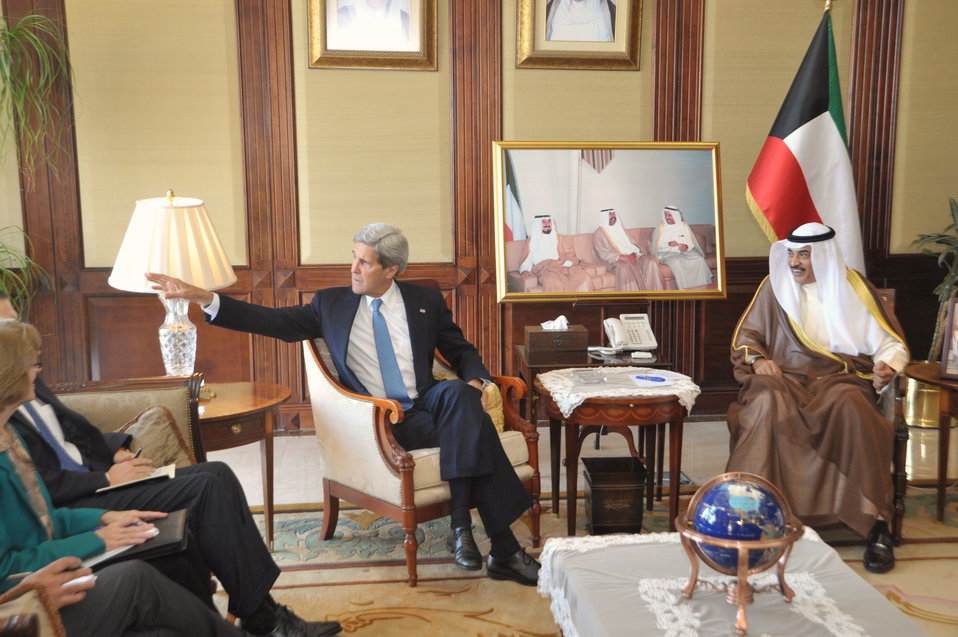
Secretary Kerry Motions Toward Iraq

U.S. Secretary of State John Kerry motions in the direction of Iraq as he gets his bearings before a meeting with Kuwaiti Foreign Minister Sheikh Sabah al Khalid al Hamad Al Sabah in Kuwait City, Kuwait, on June 26, 2013.